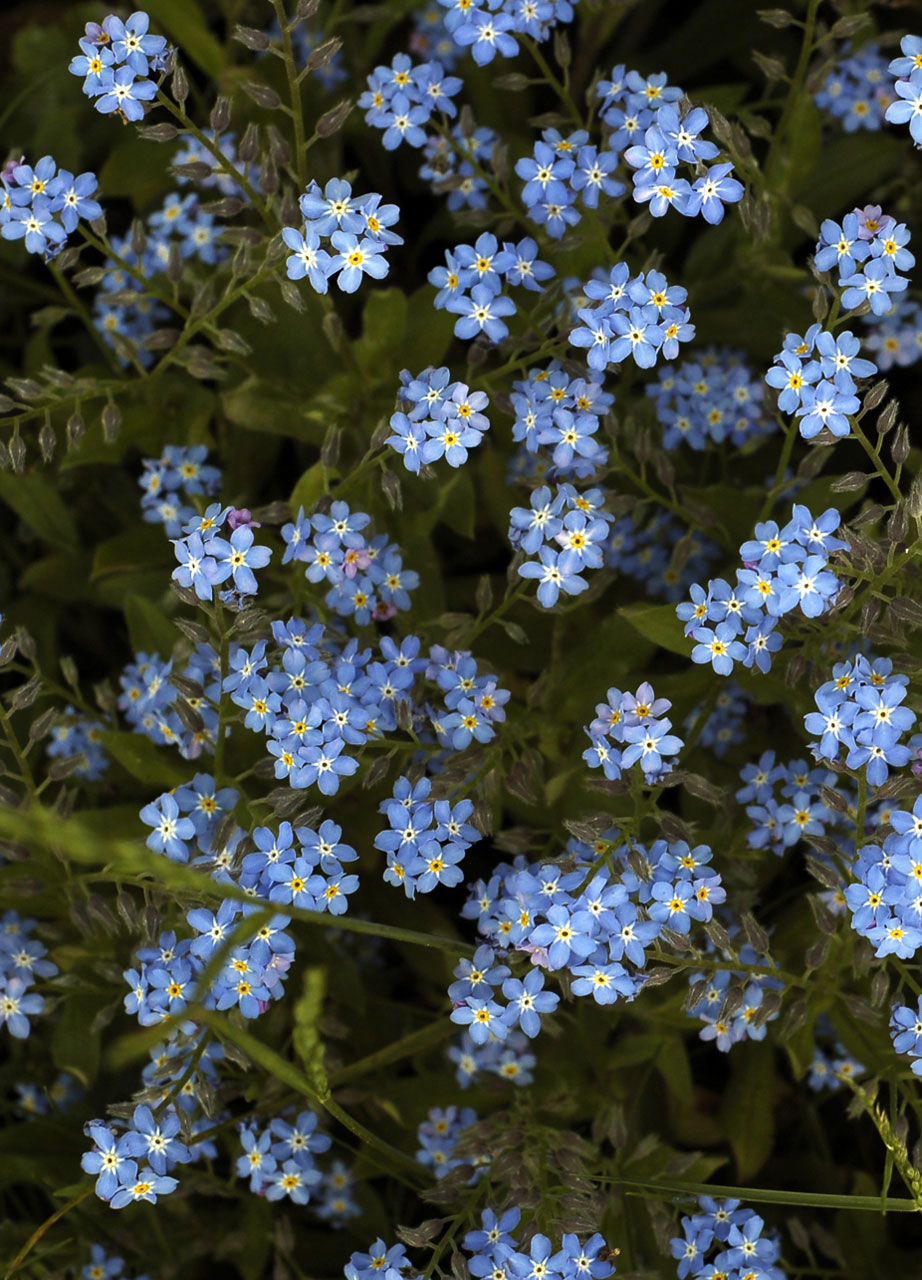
Forget-me-nots

Blue forget-me-nots in the garden.